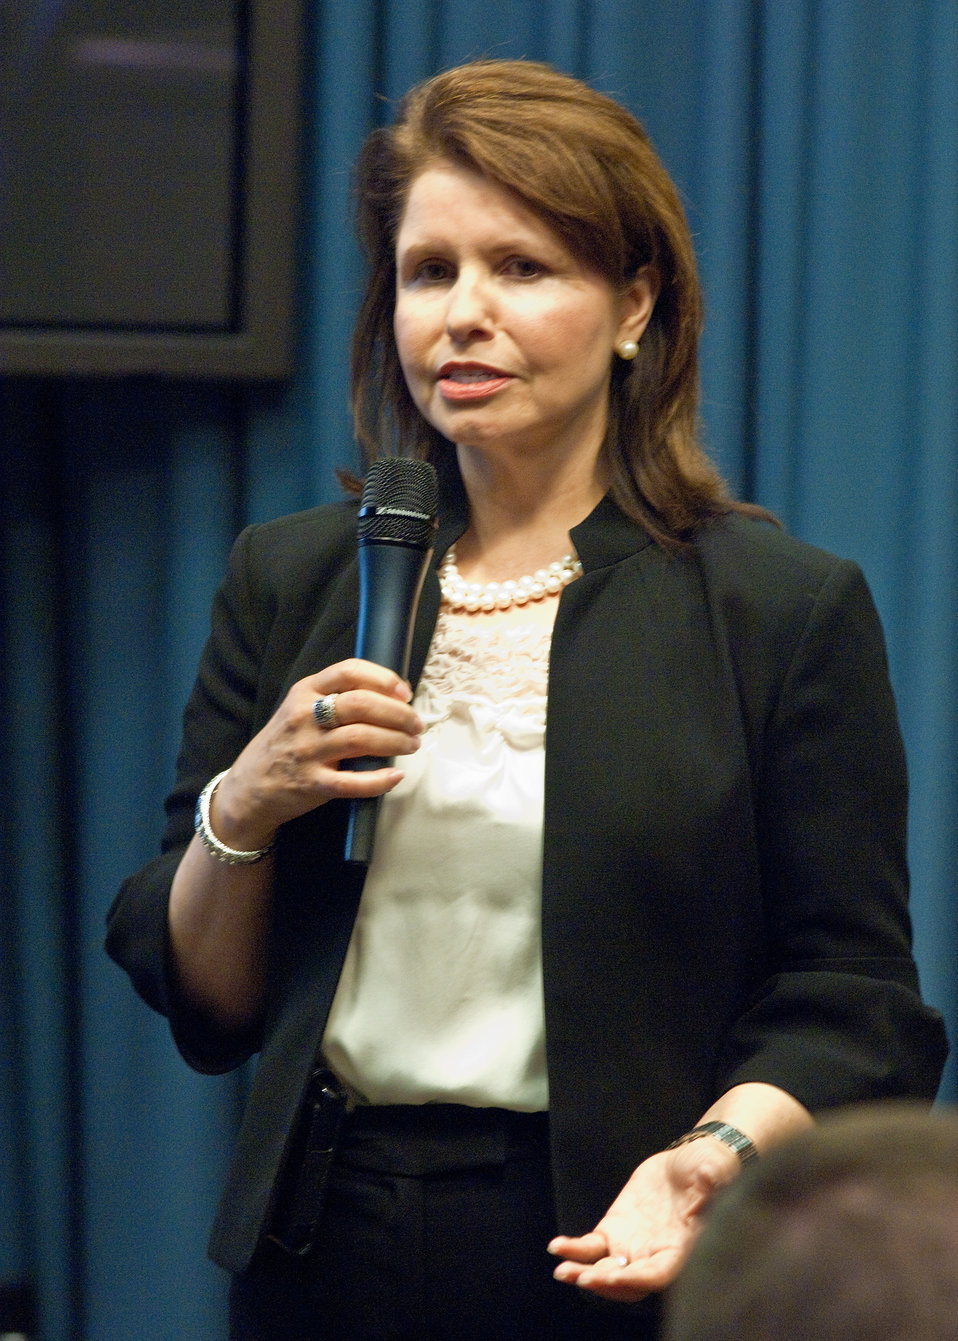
Maria Goldberg, Executive Director Hispanic Services Institutes welcomes college students to the USDA HACU and 1994 Tribal College Summer Internship Orientation Program at the Department of Agriculture in Washington, DC, Monday, June 7, 2010. USDA Photo 10di1390-13.